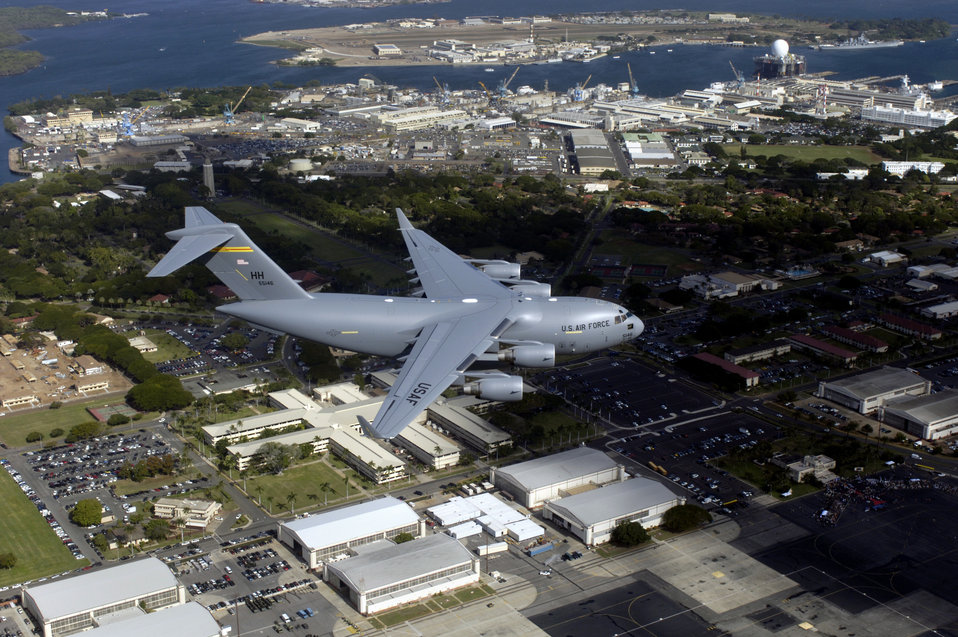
C-17 ceremony

HICKAM AIR FORCE BASE, HAWAII (AFPN) -- The first Hawaii-based C-17 Globemaster III flies over Hickam Air Force Base and nearby Pearl Harbor for the arrival ceremony. Hickam is the first base outside the continental U.S. to permanently host the C-17. By the end of the year, the base will be home to eight C-17s. The 15th Airlift Wing and the Hawaii Air National Guard 154th Wing will jointly operate and maintain the aircraft.